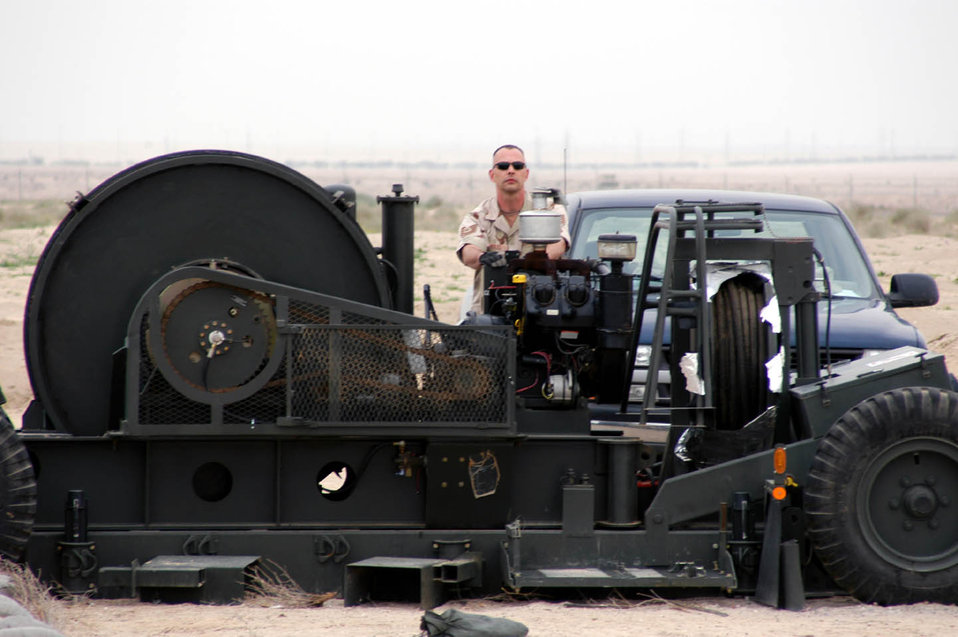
CE Airmen ready to snag an Eagle

SOUTHWEST ASIA -- Tech Sgt. Brian Holes cranks the engine on one of the mobile aircraft arresting system at a forward-deployed location. He is the 386th Expeditionary Civil Engineer power production flight superintendent.